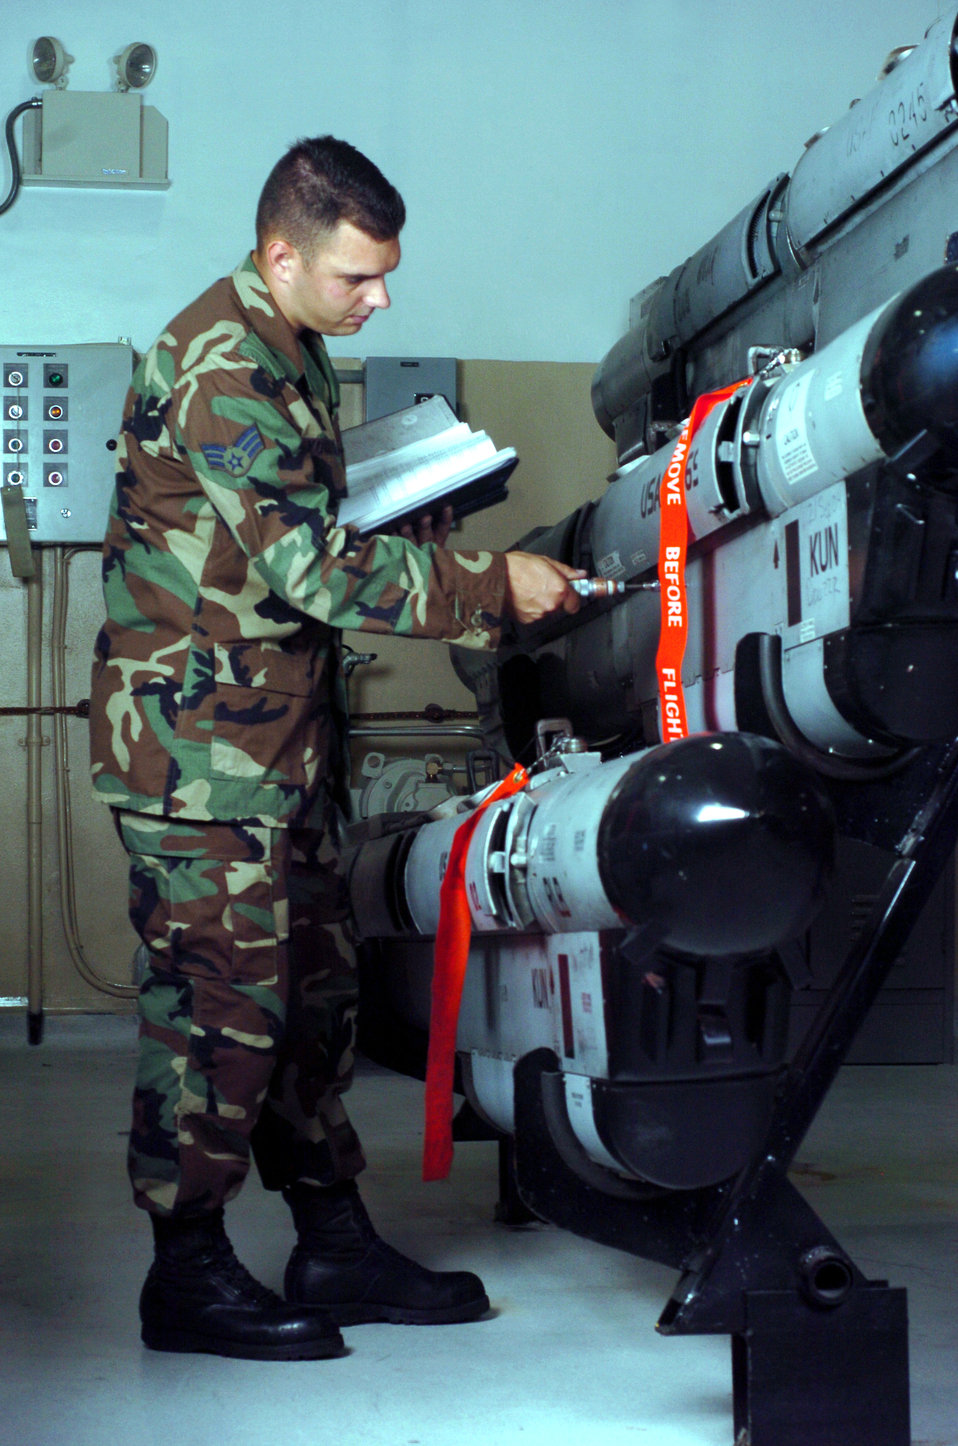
Protecting fighters

KUNSAN AIR BASE, South Korea -- Senior Airman Edward Youmans inspects an electronic countermeasures pod here. The ECM technicians maintain the F-16 Fighting Falcons pods used to defeat sophisticated anti-aircraft defense systems. Airman Youmans is assigned to the 8th Maintenance Squadron.